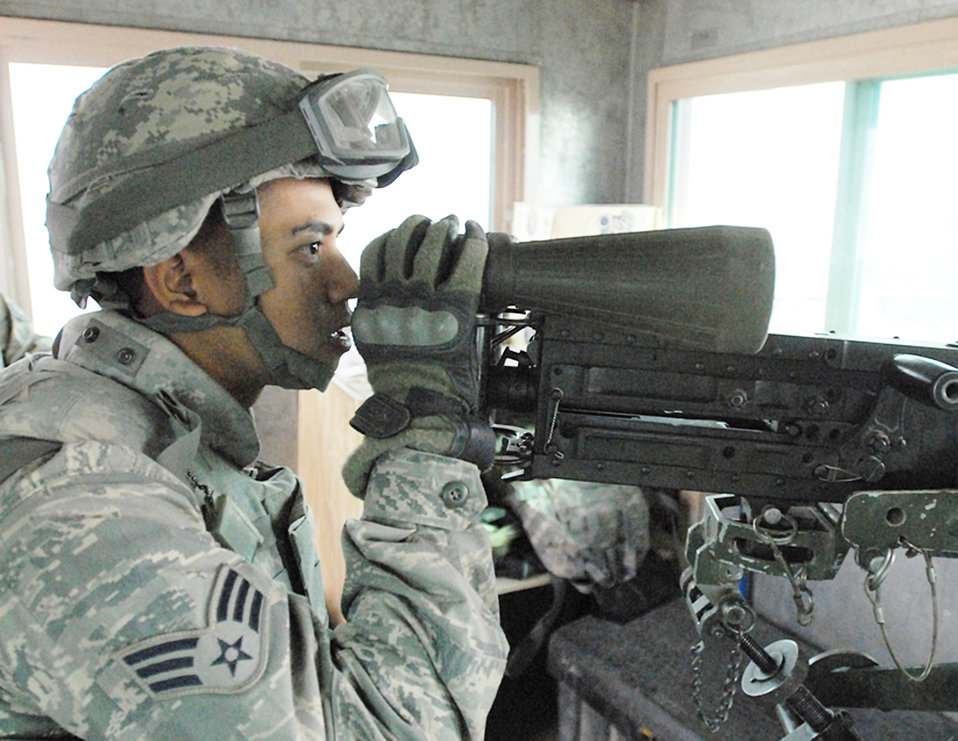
Forces work jointly for security at Bagram

Senior Airman Mark Joco watches the perimeter at an entry control point Oct. 27, 2009, at Bagram Airfield, Afghanistan. Airman Joco is a security forces gunner with the 455th Expeditionary Security Forces Squadron deployed from Nellis Air Force Base, Nev. He is a native of Yokosuka, Japan.